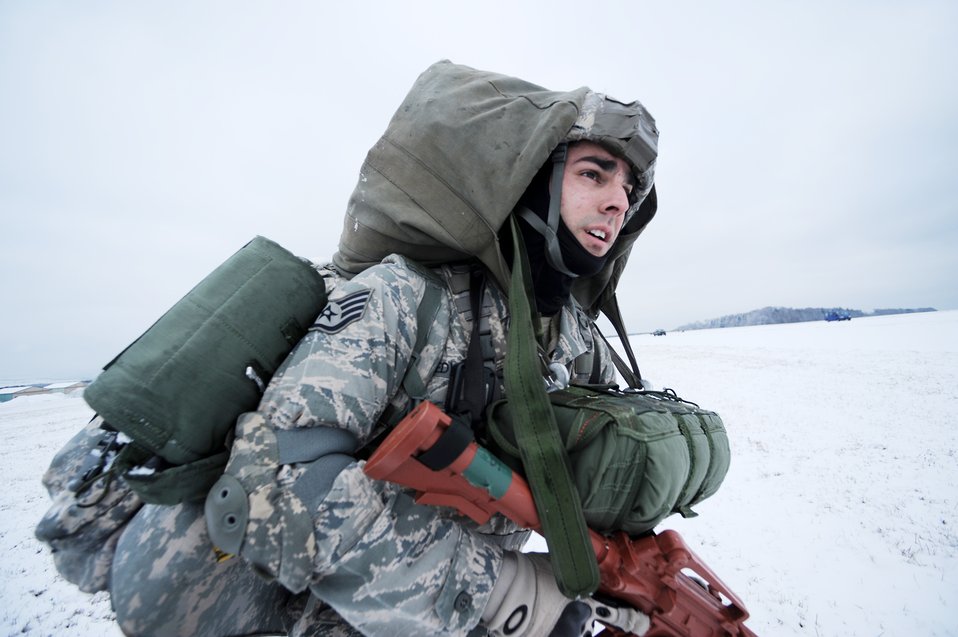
Ramstein forces practice air insertion

Staff Sgt. Dave Edward, with the 435th Security Forces Squadron at Ramstein Air Base, Germany, maneuvers towards a rally point at nearby Bitburg Airport Jan. 25, 2010, in preparation of Ramstein's operational readiness inspection in September. The unit is setting up bare-base operations as part of the dual-wing operational readiness exercise with the 86th Airlift Wing.